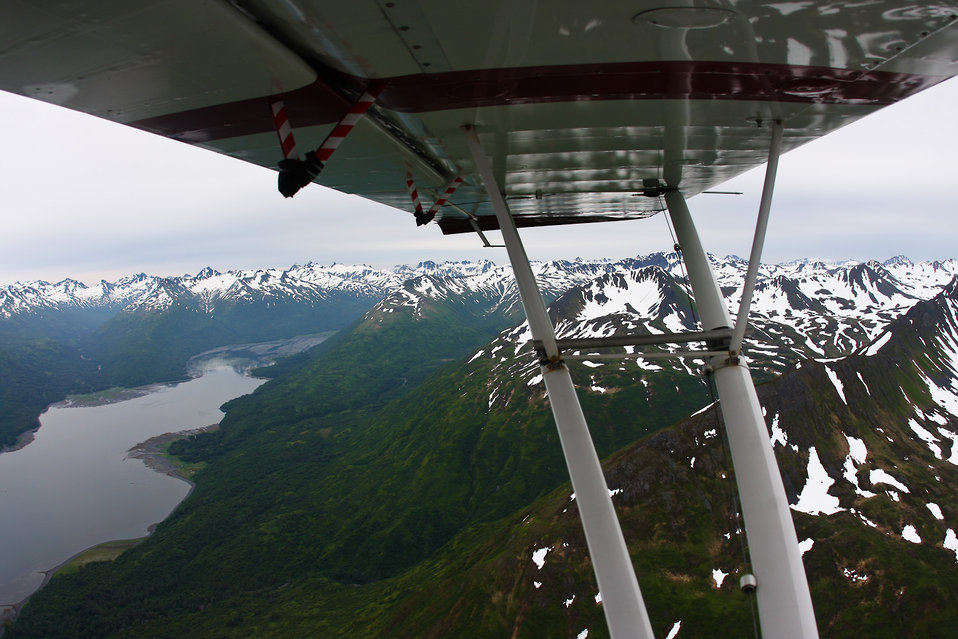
Flying west

Kodiak Island.
Lisa Hupp/USFWS